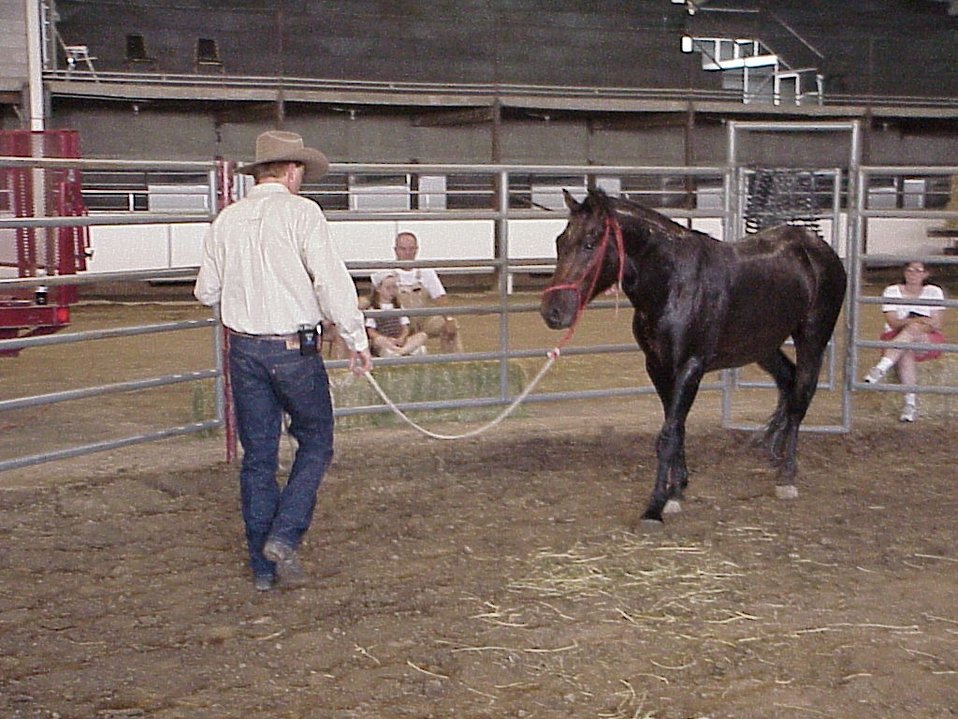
Horse Gentler Mario Johnson Lewiston Wild Horse and Burro Adoption Program Auction WHB indoor auction Cottonwood Field Office UCSC Upper Columbia Salmon Clearwater District